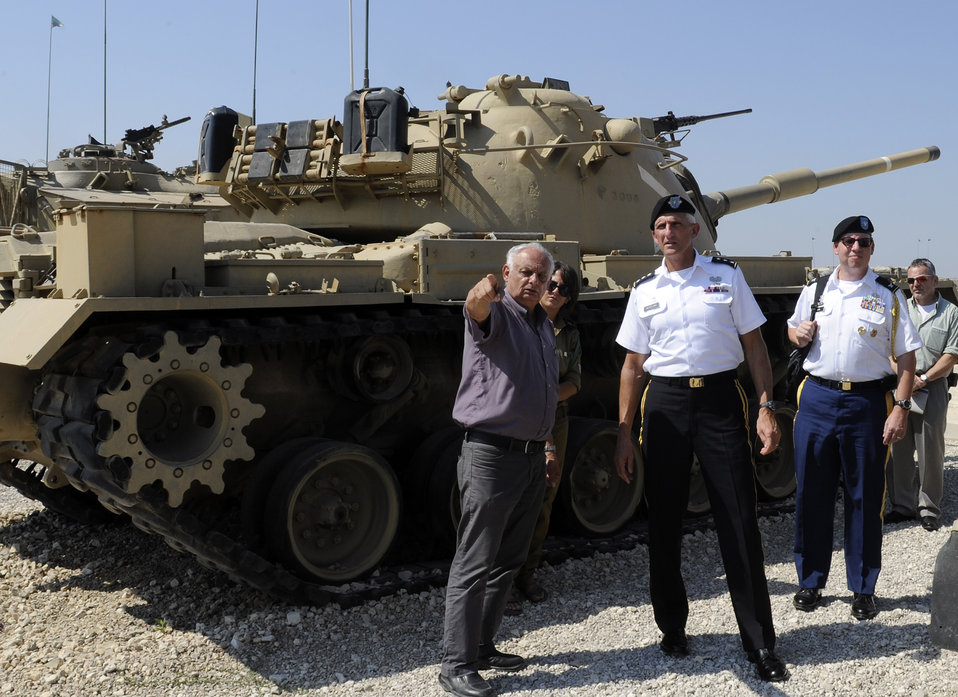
Lieutenant Hertling Tours the Latroun Museum and Grounds in Israel

Lieutenant General Mark P. Hertling, commanding general of the U.S. Army Europe, is guided by Director of the Zvi Meitar Institute for Land Warfare Studies, Gideon Avidor, on a tour of the Latroun Museum and grounds in Latroun, Israel, on August 10, 2011. Lieutenant Hertling met with his Israeli Defense Forces counterpart, Major General Sami Turgeman, to discuss training cooperation between the U.S. and Israeli militaries earlier in the day.